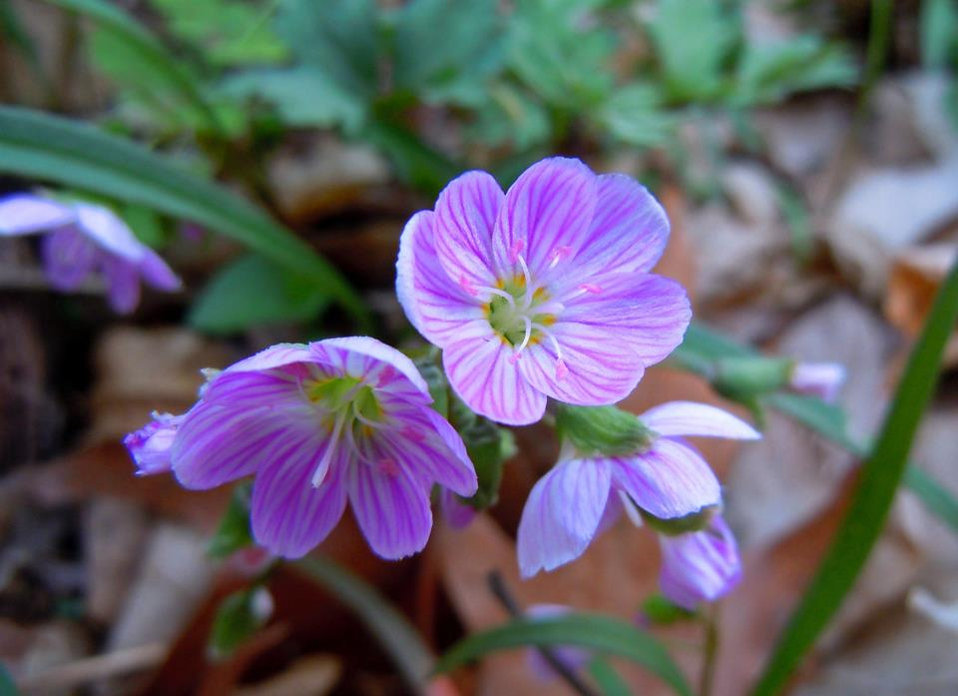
spring beauty

Port Louisa National Wildlife Refuge, IA
March 27, 2012